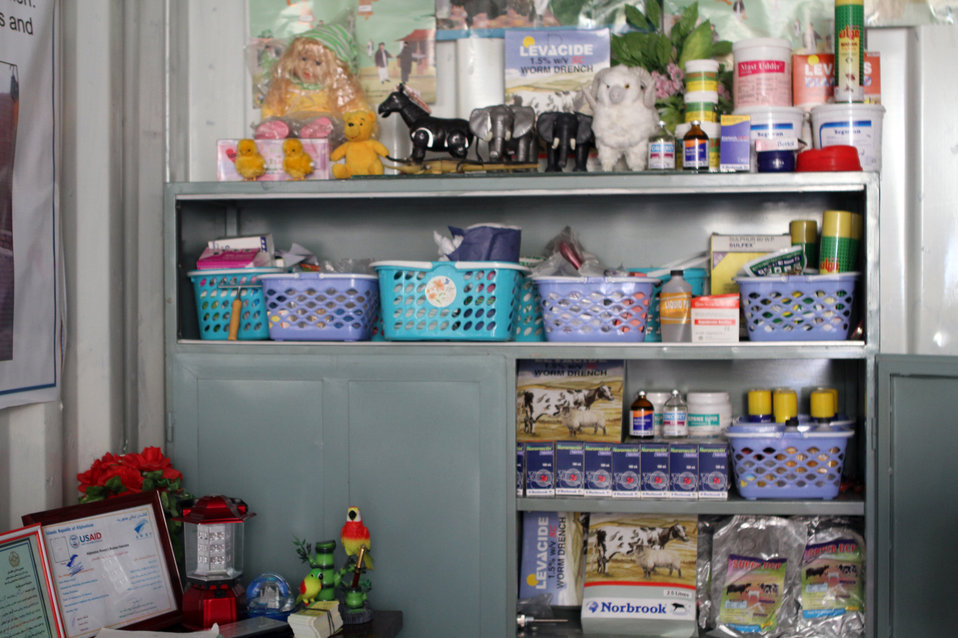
Development of Veterinary...